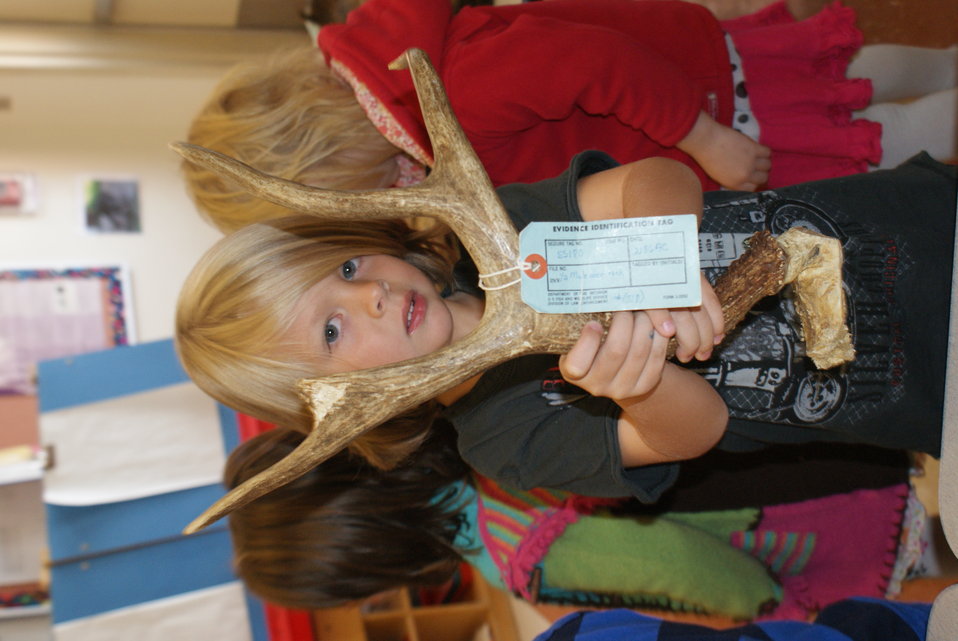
Scientists in the Community Program

U.S. Fish and Wildlife Service Mountain-Prairie Region Deputy ARD for External Affairs, Matt Kales, introduces early childhood education students at William Roberts Elementary School in Denver to some of Colorado's native and historic wildlife species.